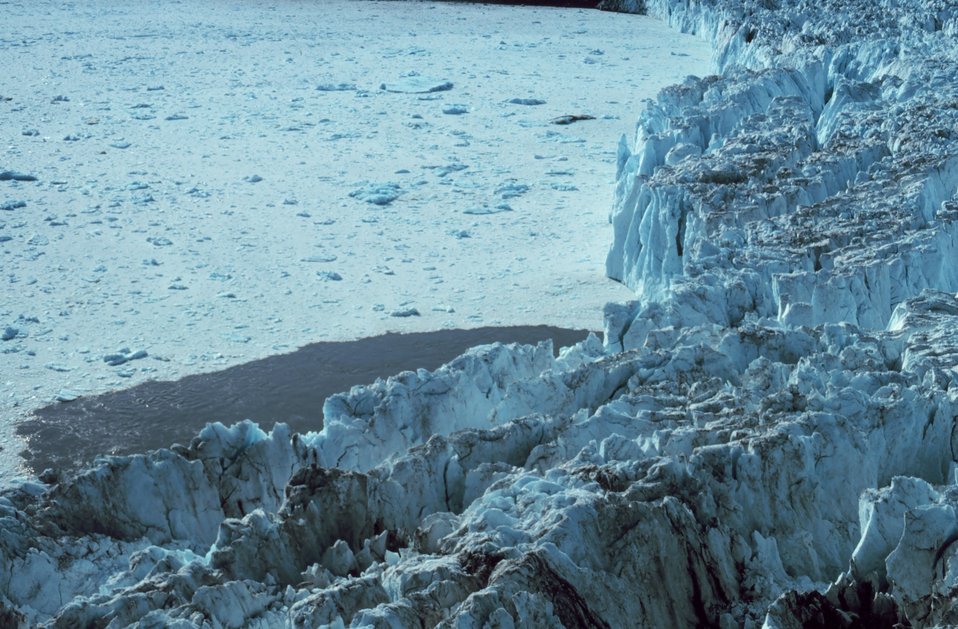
A glacial front from above.